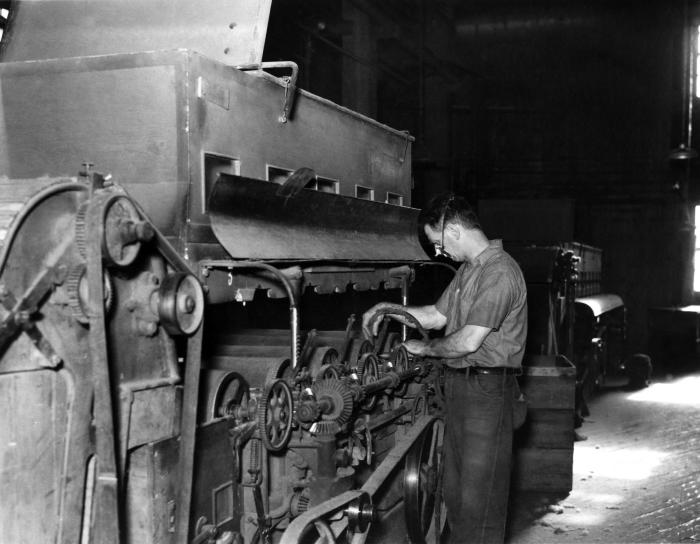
Provided by the Center for Disease Control's (CDC), National Institute for Occupational Safety and Health (NIOSH), this historic image, shot inside a Connecticut hat manufacturing plant, depicted one of the machines used in the fur hatters' industry, which was being cleaned by a factory worker who was using compressed air to blow out debris from the machine components. Something which is very important was the fact that the man was wearing a protective breathing mask, which prevented his from inhaling contaminats made airborne by his task, as well as particulates made airborne during the hat manufacturing process. Being that the manufacturing process involves the use of mercury nitrite, if precautions were not taken, such as wearing a filtered breathing mask, or gloves, mercury exposure was quite likely, leading to heavy metal poisoning, with severe pathologic neurological consequences.